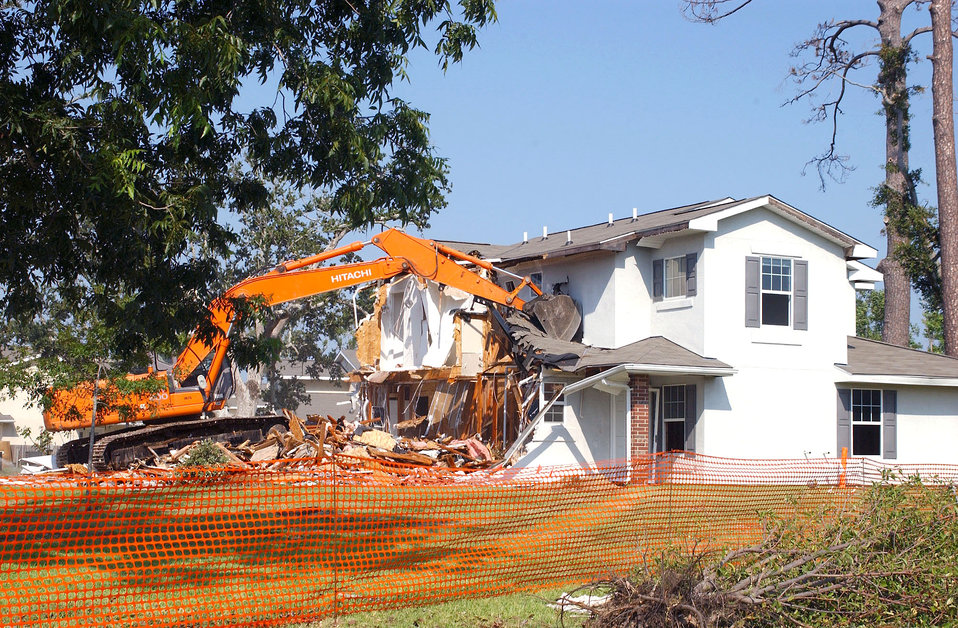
Keesler Air Force Base: One year after Katrina

Housing demolition continues in South Pinehaven military family housing at Keesler Air Force Base, Miss., where Katrina's storm surge and wind caused widespread damage.